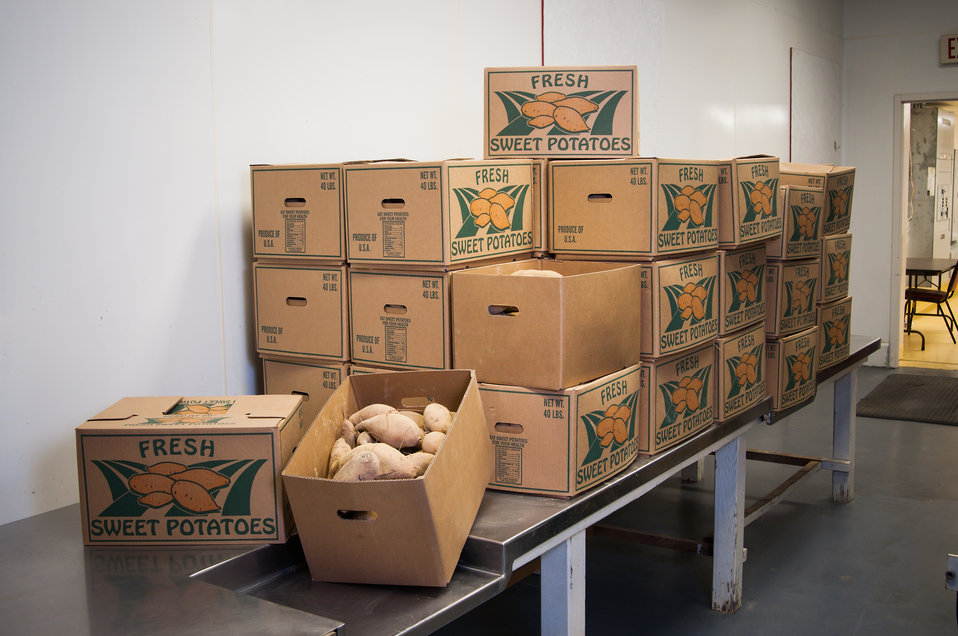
Beauregard sweet potatoes packaged at the University of Arkansas at Pine Bluff, Agriculture Demonstration Outreach Center in Marianna, AR on Mar. 5, 2013. The Arkansas Delta Seeds of Change (ADSOC) was able to purchase production equipment with a U.S. Department of Agriculture (USDA) Rural Development (RD) Rural Business Enterprise Grant (RBEG). USDA in partnership Heifer International (an International organization whose mission is to work with communities to end hunger and poverty and care for the Earth) and various for-profit and non-profit organizations have put in motion the “Seeds of Change Implementation Plan” to use sustainable agriculture to build food systems in the Arkansas Delta. The program has evolved into the ADSOC Initiative. The ADSOC Initiative assists producers with technical assistance for crop production, management, harvesting, food security, value added products and marketing options and provides access to specialized production and marketing equipment.